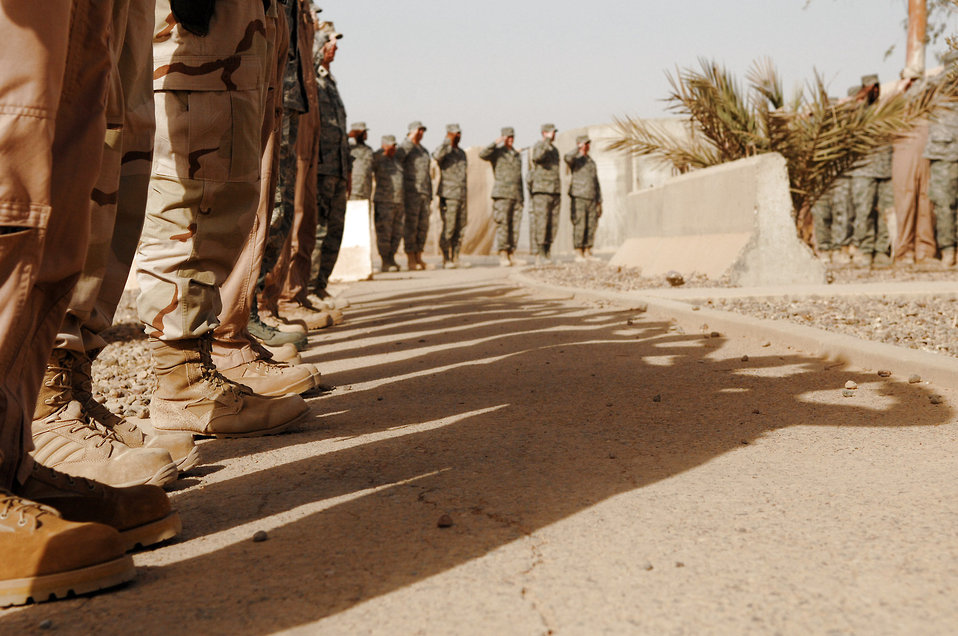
455 AEW holds memorial vigil

Airmen assigned to the 332nd Air Expeditionary Wing at Balad Air Base, Iraq, participate in a Memorial Day observance ceremony May 26. During the ceremony, the names of 44 Airmen assigned to the 332nd AEW who have died since 2003 were read. The list included the names of three Airmen who died this year.